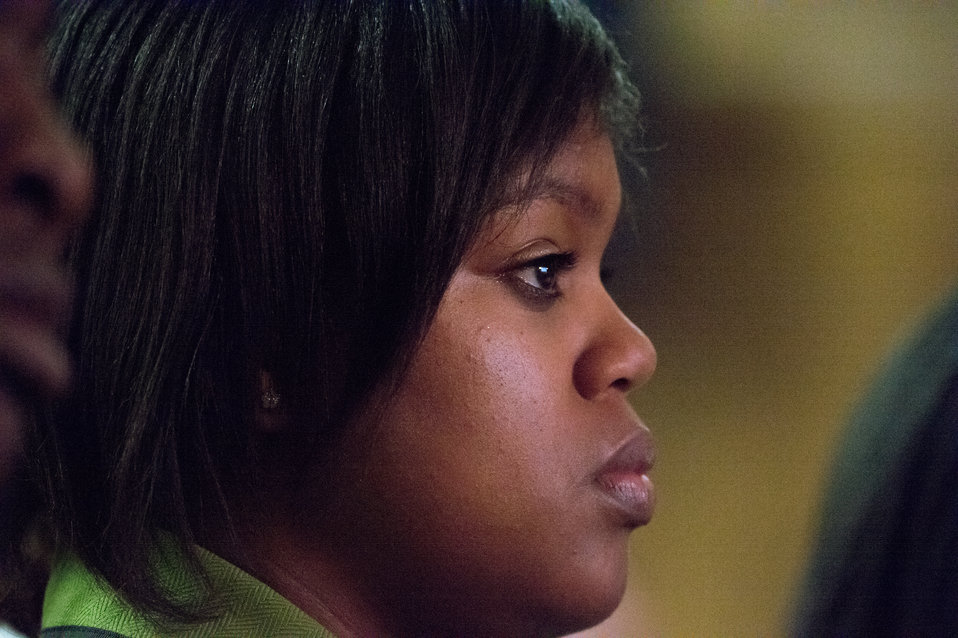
A student listens to the discussion panels at he Borlaug Symposium commemorating the late Dr. Norman Borlaug's 100th Birthday and vision, held in the Jefferson Auditorium of the U.S. Department of Agriculture (USDA) in Washington, D.C. on Tuesday, Mar. 25, 2014. The symposium highlights current efforts addressing global hunger. The symposium panels will feature high school and university students, as well as, scientists and policy advisors at Monsanto Chief Technology Officer Robb Farley talks about mobile communication and it's relationship to agriculture, at the Borlaug Symposium commemorating the late Dr. Norman E. Borlaug's 100th Birthday hosted by the U.S. Department of Agriculture (USDA) in the Jefferson Auditorium of USDA in Washington, D.C. on Tuesday, Mar. 25, 2014. The symposium will highlight current efforts addressing global hunger. The symposium panels will feature high school and university students, as well as, scientists and policy advisors at U.S. Agency for International Development (USAID), USDA and Non-Governmental Organizations (NGO). The symposium was planned in partnership with: U.S. Agency for International Development (USAID), Cornell University, Iowa State University, University of Minnesota, The Norman Borlaug Institute for International Agriculture, Texas A and M University, and the World Food Prize.